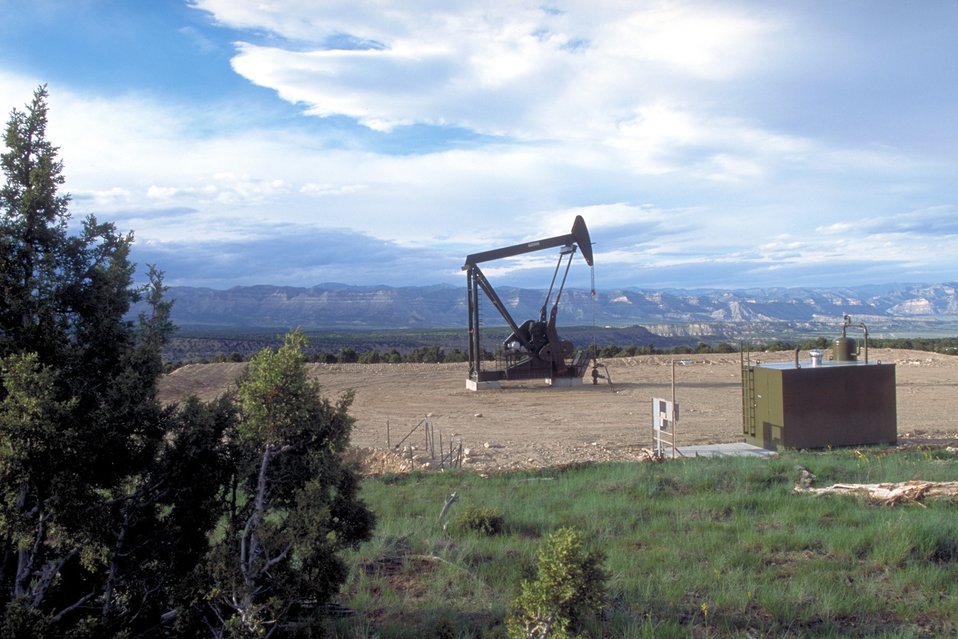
Pump unit producing coal bed methane near Price, Utah.